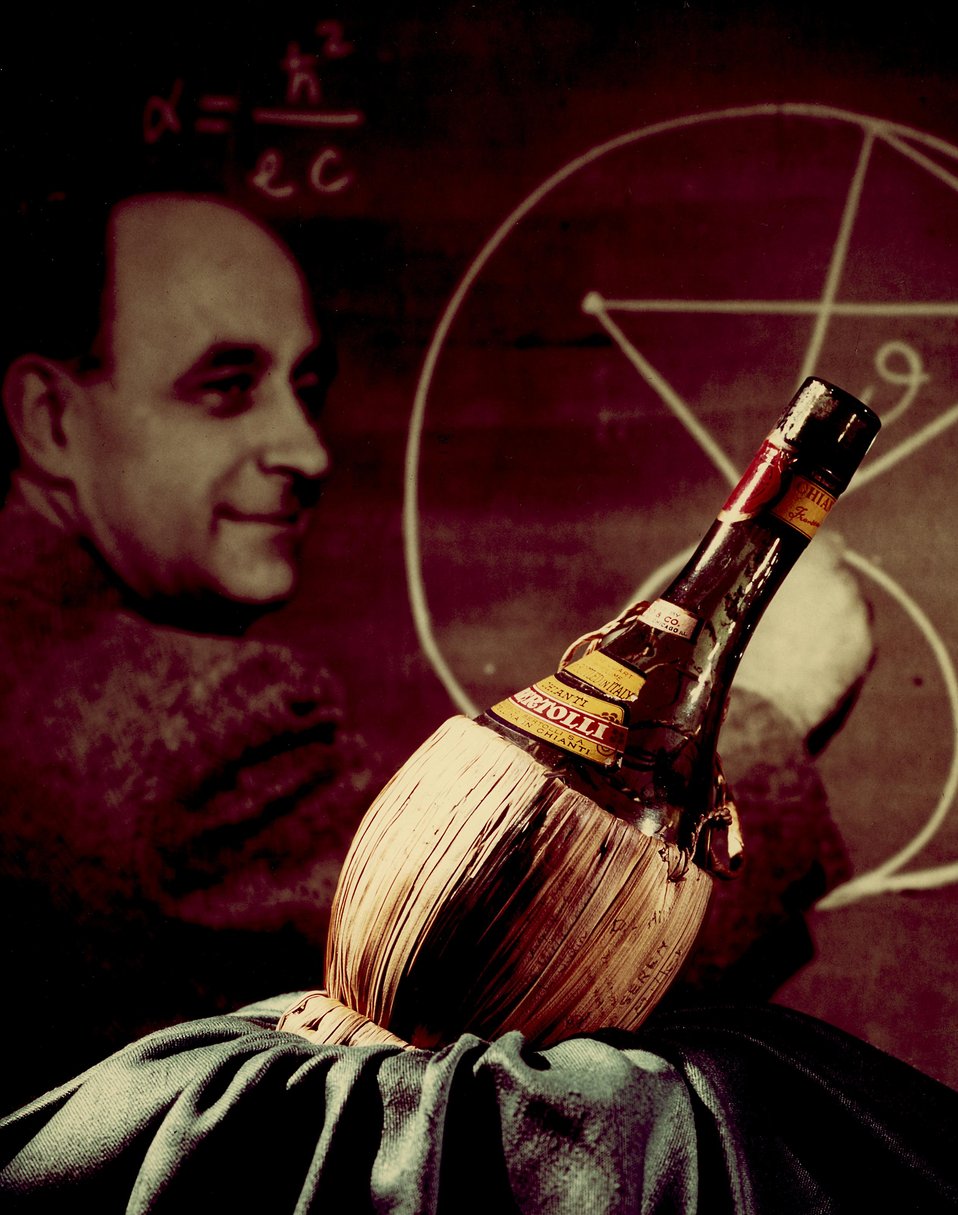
Photo montage of Fermi with the CP-1 Chianti bottle.